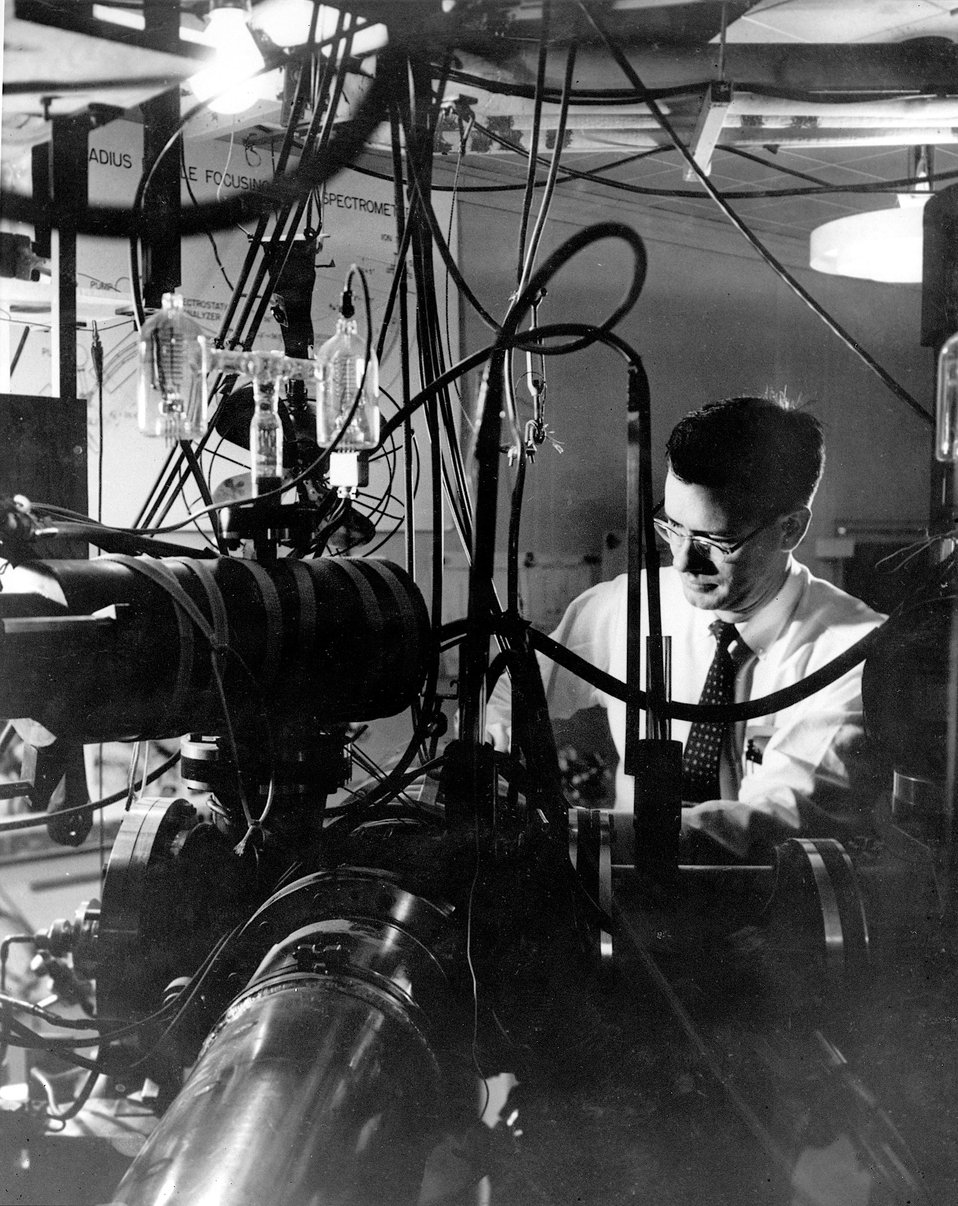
High-precision instrument used for the isotopic analysis of very small amounts of material.
c.1966